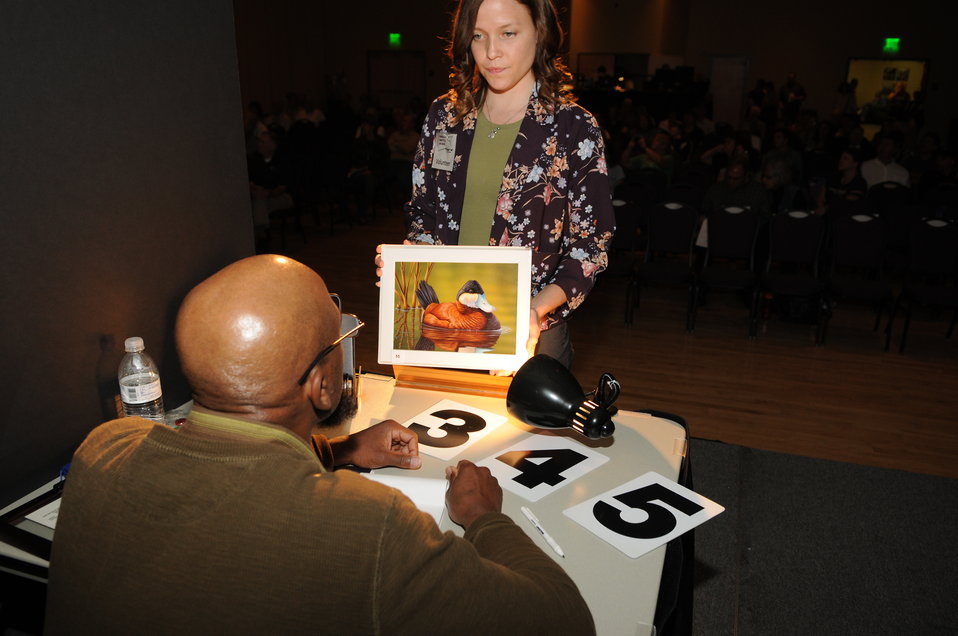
Judging

The U.S. Fish & Wildlife Service sponsored the 2012 Federal Duck Stamp Art Contest September 28 and 29 in Ogden, Utah, at Weber State University. A panel of five judges was responsible for choosing the art work used to design the 2013-2014 Migratory Bird Hunting and Conservation Stamp.